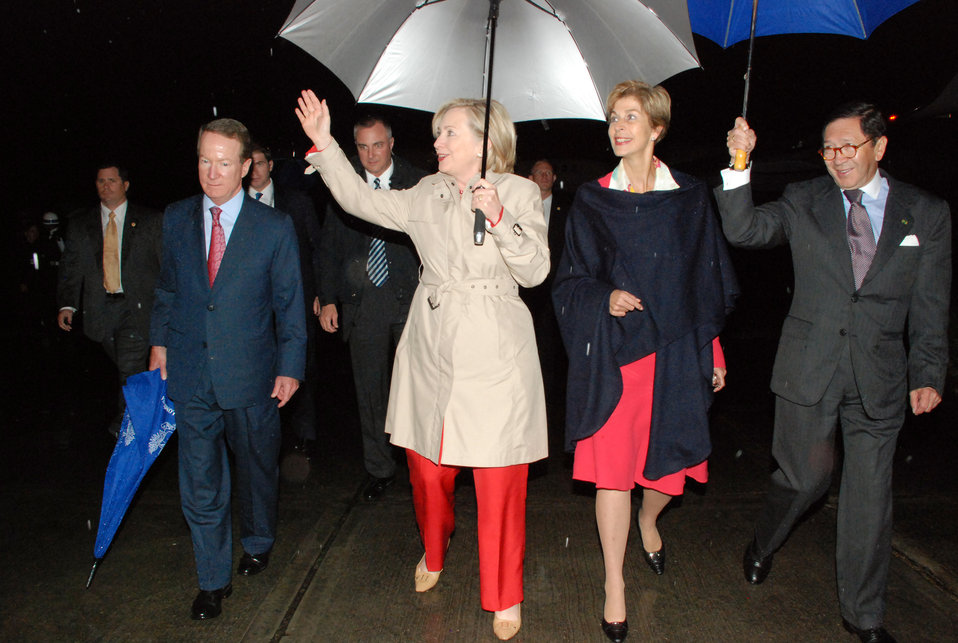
Secretary Clinton Arrives in Colombia

U.S. Secretary of State Hillary Rodham Clinton is accompanied by U.S. Ambassador to Colombia William R. Brownfield and Colombian Ambassador Carolina Barco as she arrives at CATAM airport in Bogotá Colombia June 8, 2010.